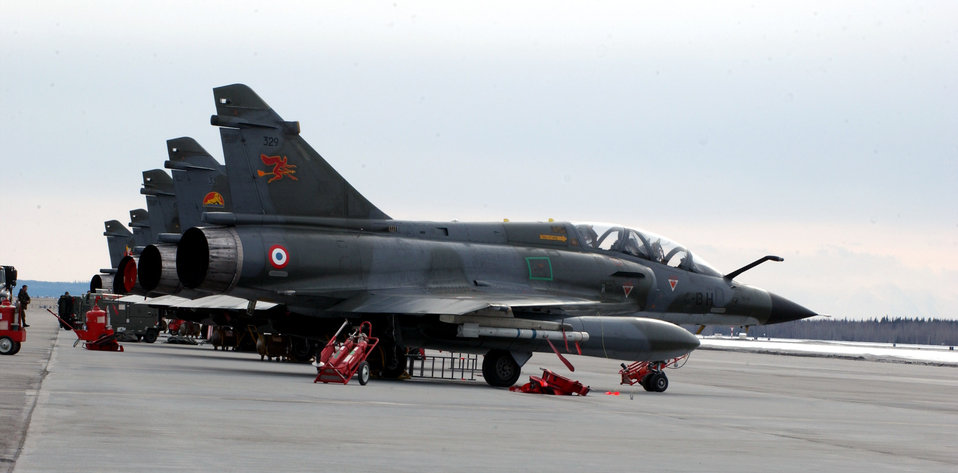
Red Flag forces huddle up at Eielson

French air force M2000 Mirages await a mission for Red Flag-Alaska 07-1 in April at Eielson Air Force Base, Alaska. Red Flag-Alaska is a Pacific Air Forces-directed field training exercise flown under simulated air combat conditions. It is conducted on the Pacific Alaskan Range Complex with air operations flown out of Eielson and Elmendorf Air Force bases.